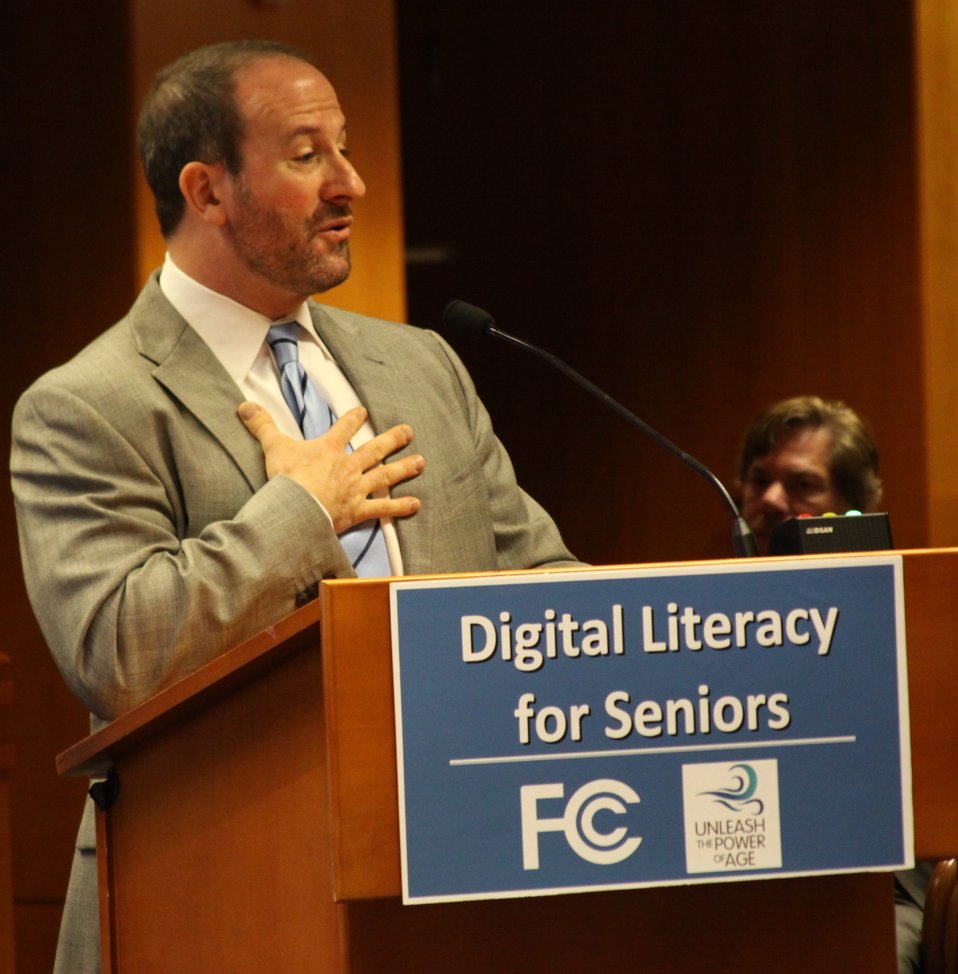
Thomas Kamber, PhD, Executive director, Older Adults Technology Services (OATS): Digital Literacy for Seniors: How the Internet Can Benefit Older Americans, April 24, 2013